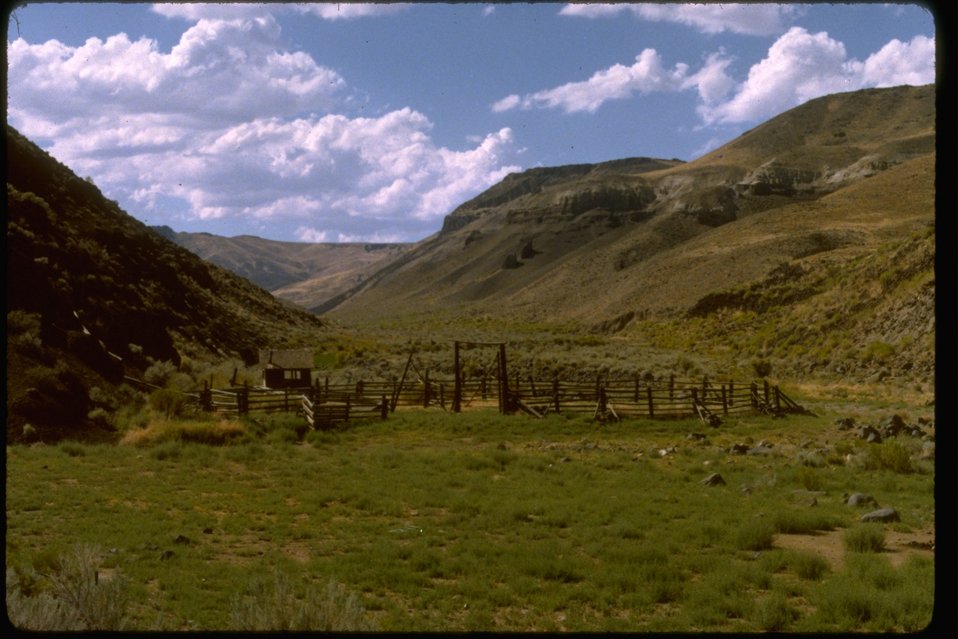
Livestock corral in prairie canyon. OR 3-53